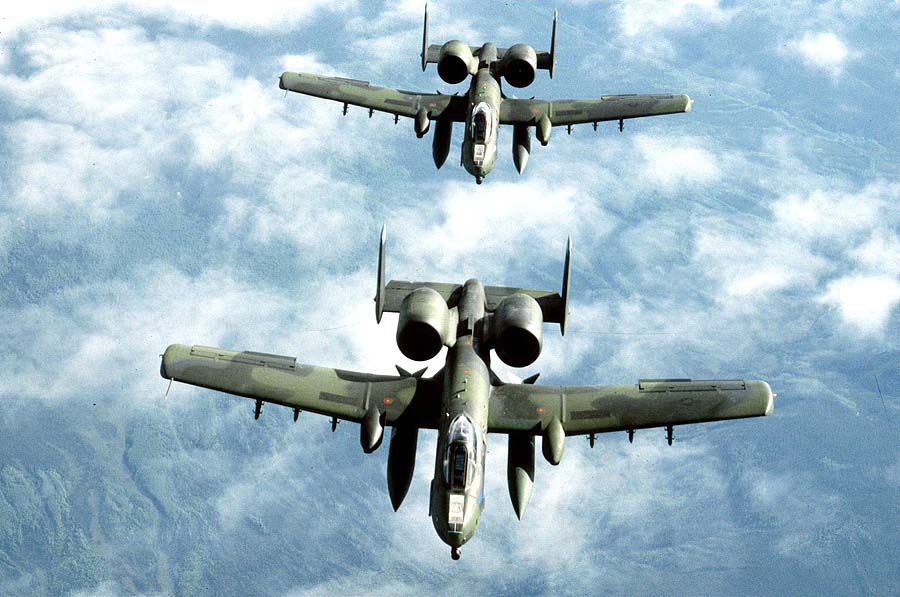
Thunderbolt II flight

1990's -- The A-10 Thunderbolt II is the first Air Force aircraft specially designed for close air support of ground forces. They are simple, effective and survivable twin-engine jet aircraft that can be used against all ground targets, including tanks and other armored vehicles.